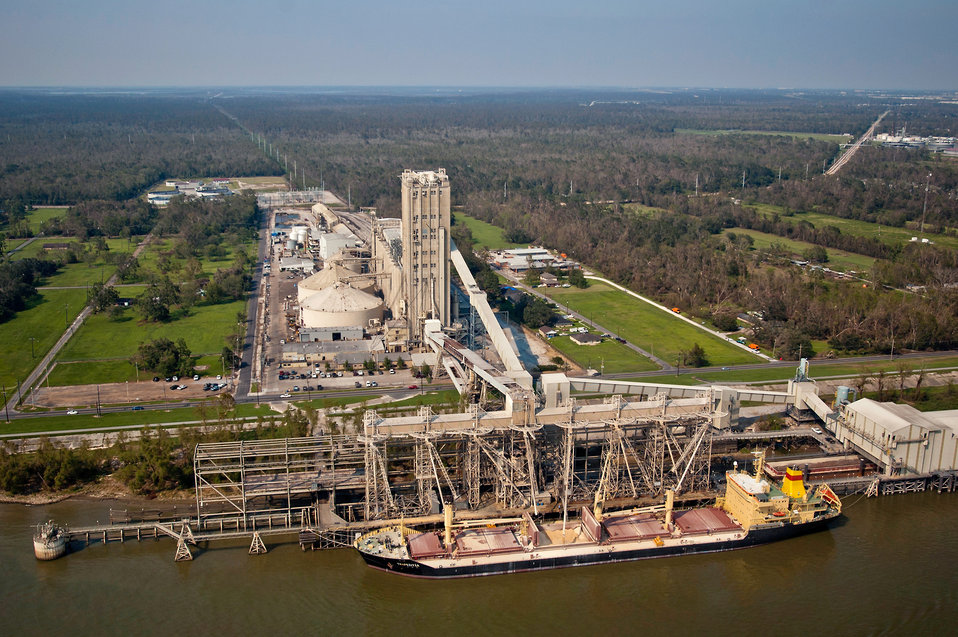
Barge and ship traffic transporting export cargo on the Mississippi River in the Port of New Orleans, New Orleans, LA on Sept. 9, 2005.